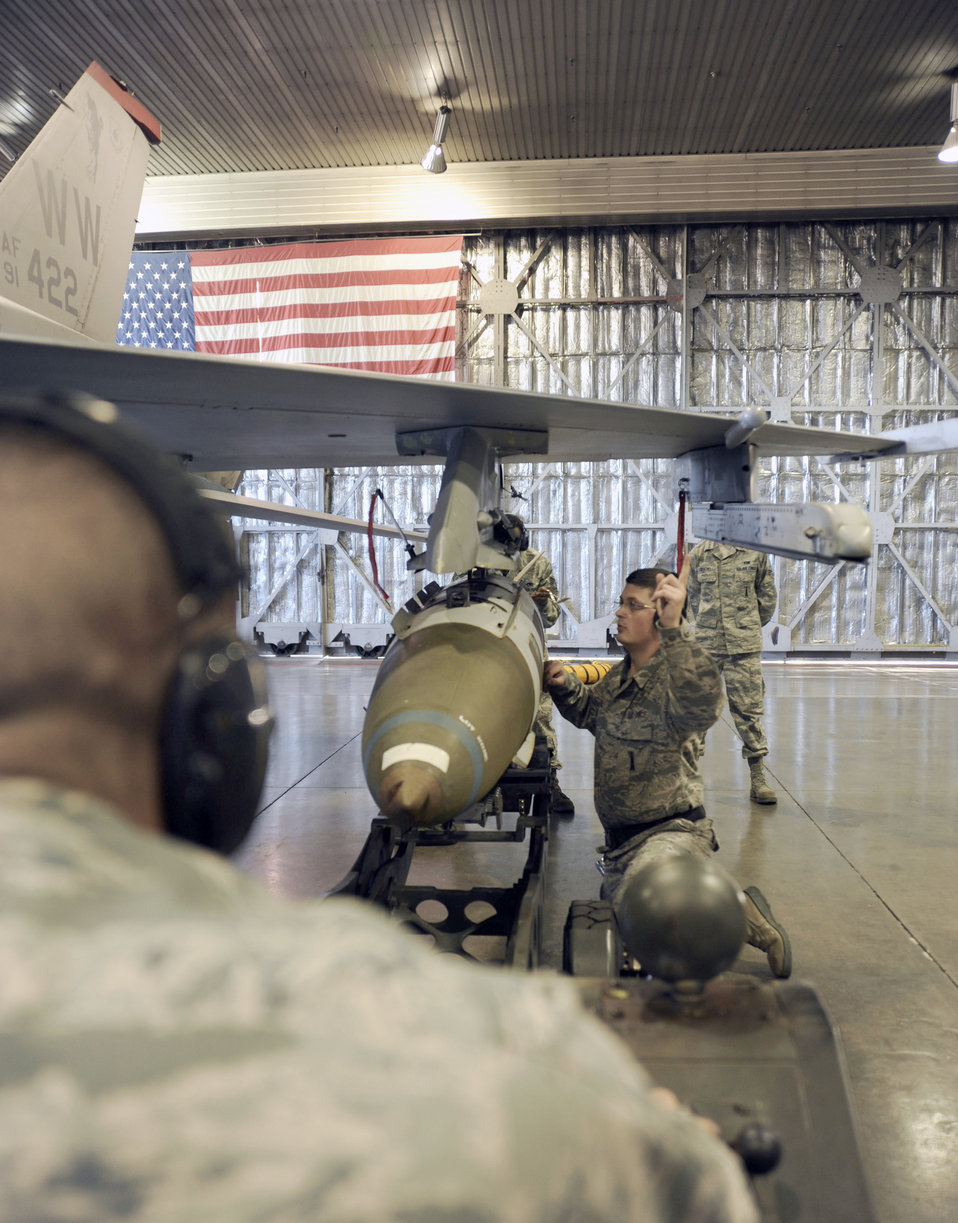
Load crew competition

Staff Sgt. Nikolai Yeakel (right) directs Airman 1st Class Cassey Dukart as they compete in the final round of the wing load crew competition Dec. 17, 2010, at Misawa Air Base, Japan. Sergeant Yeakel is a weapons load crew chief and Airman Dukart is a crewmember, both with the 35th Maintenance Squadron. The Airmen were on the winning team with a score of 1765 points.